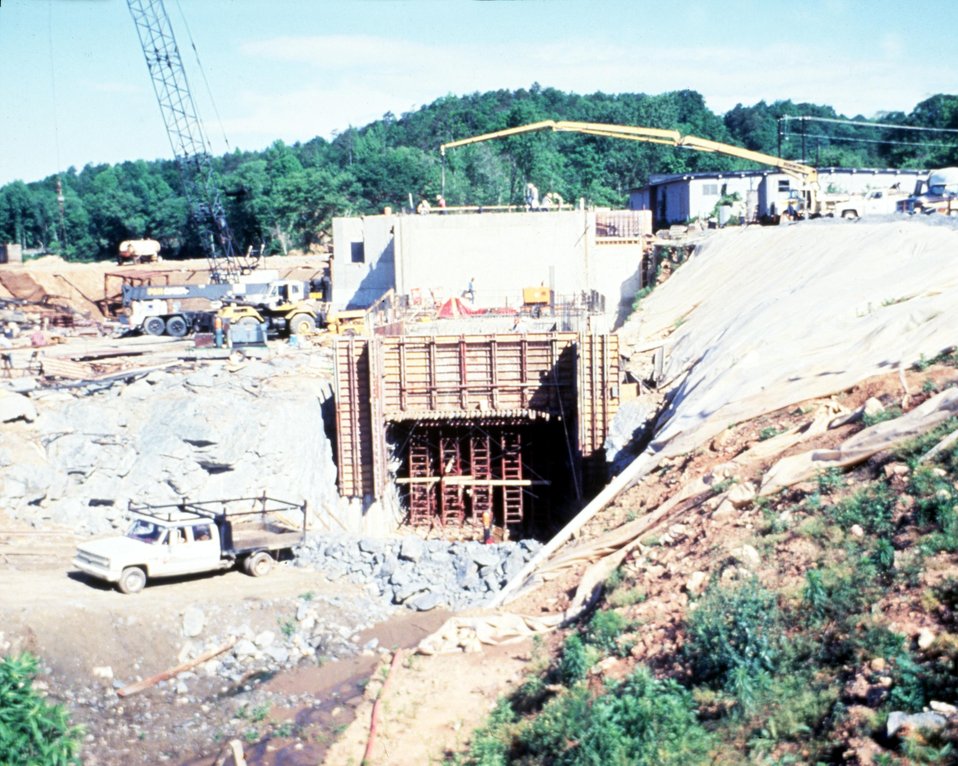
TAILRACE AREA DURING CONSTRUCTION.

THE DOE SMALL-SCALE HYDROPOWER PROGRAM CONSISTS OF 19 PROJECTS AND DEMONSTRATES THE VIABILITY OF SMALL-SCALE HYDRO-POWER WITH AVAILABLE TECHNOLOGY. THE BROAD RIVER PROJECT, BEGUN IN JANUARY, 1983, WENT ON LINE DECEMBER 27, 1987. UTILIZING ONE OPEN-PIT TUBULAR TURBINE THAT PRODUCES A MAXIMUM OF 4,140 KILOWATTS, THE DAM PROVIDES A GROSS HEAD OF 20.2 FEET WITH AN ANNUAL STREAM FLOW OF 2,472 CFS.